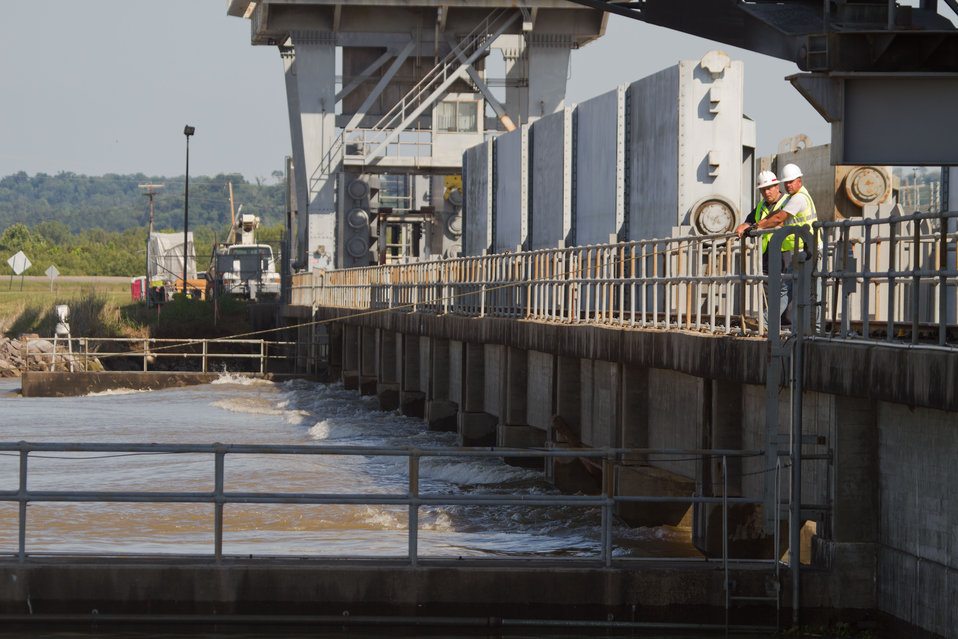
The Army Corps of Engineers conduct daily depth measurements along the intake side of The Old River Control Complex, Low Sill Structure in Concordia Parish, LA, on Tuesday, May 17, 2011. The measurements tell both the condition along the intake “ramp” and allow them to calculate the flow through the gates. The Old River Control Complex is designed to channel as much as 30 percent of the Mississippi River’s flow into the Gulf of Mexico through it’s eleven 44-foot wide gates across 566 foot span that separates the Mississippi and (the outflow channel to the) Red and Atchafalaya Rivers. Rated at 300,000 million gallons per minute (note: That’s more than seven Olympic sized swimming pools every second). Although this helps the Mississippi River, it (along with other concerns, puts back pressure on the Red River and other waterways, possibly causing some flooding of farms to avoid a catastrophic breech of the levee system. Most of the gates have been opened by a rolling crane and stored in racks. Debris, some as larger than telephone polls make their way through the gates and pool in eddies. The constant motion and contact with other objects, strip trees of their branches and bark. 20-30 pound Carp can frequently be seen jumping out of the white water.